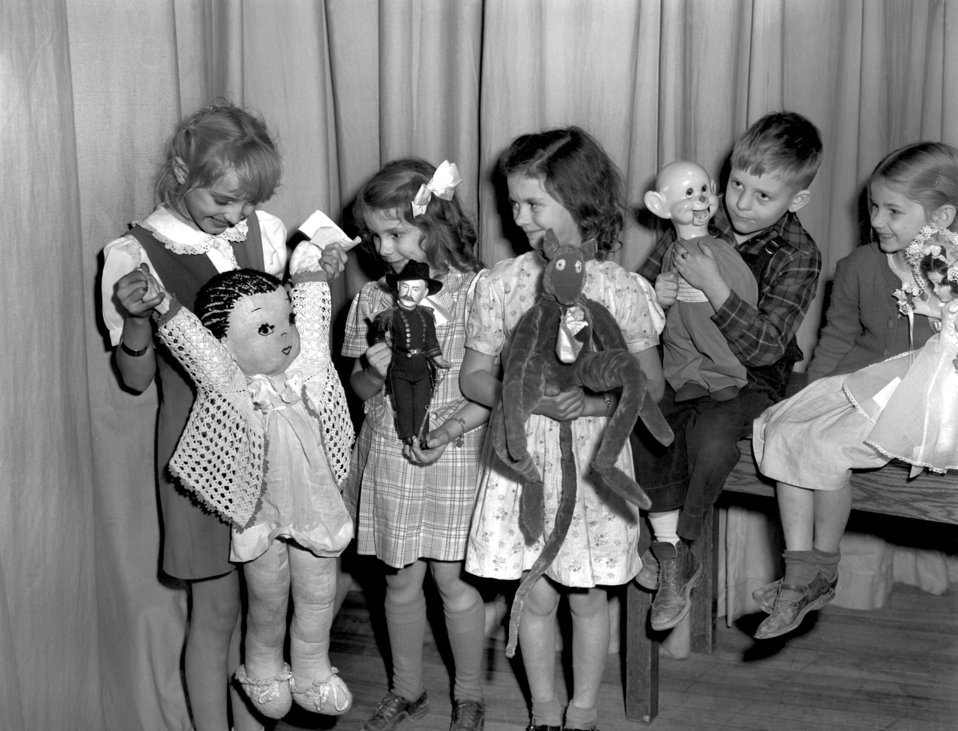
Doll Show Highland View School Oak Ridge

3235-4bn DOE photo by Ed Westcott 1-10-1947 Oak Ridge Tennessee